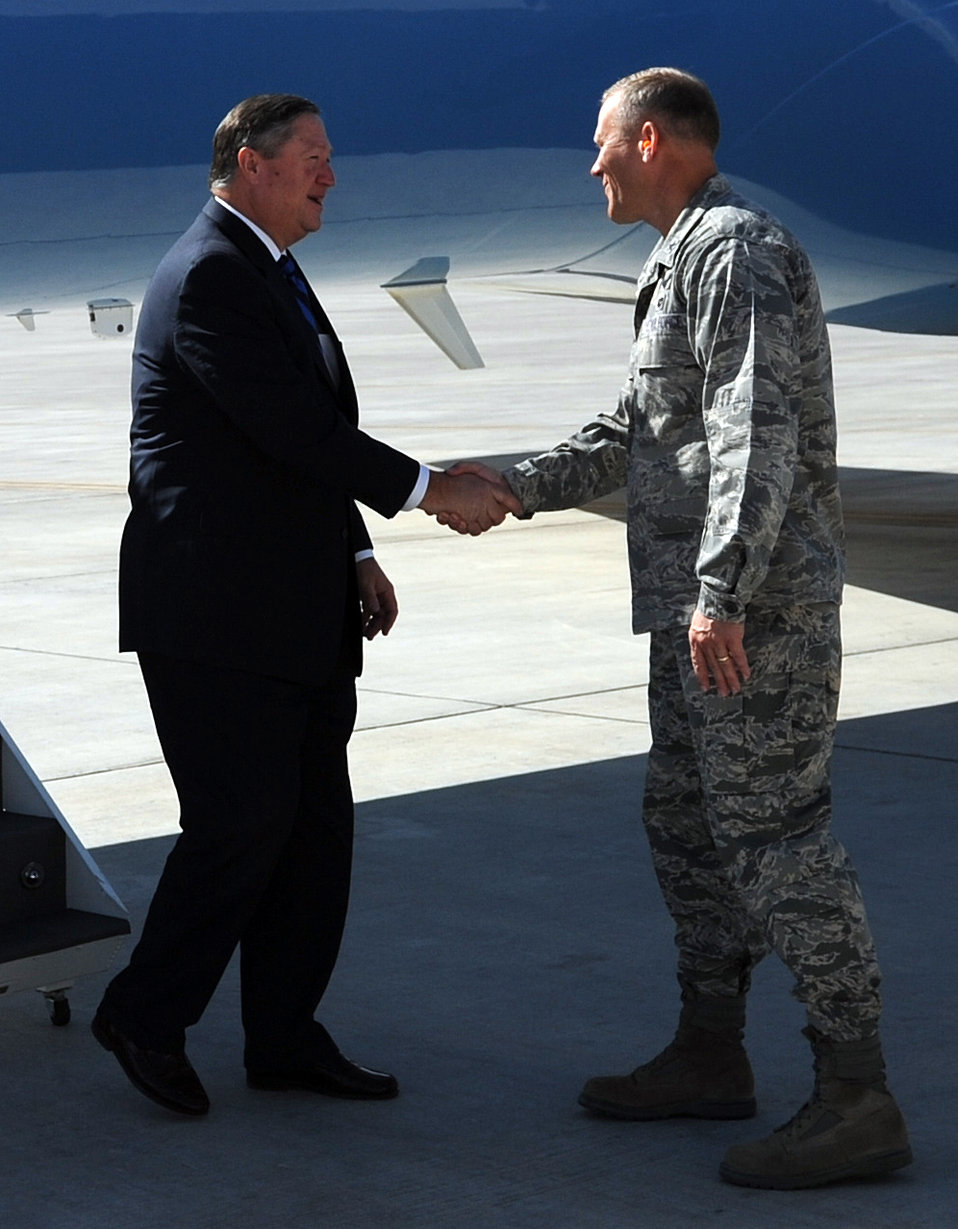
SecAF visits 380th AEW

SOUTHWEST ASIA - Brig. Gen. Jeff Lofgren welcomes Secretary of the Air Force Michael Donley Dec. 23, 2011. During the SecAF's two-day tour of the 380th Air Expeditionary Wing, Airmen, Soldiers and Sailors briefed him about current and future operations.